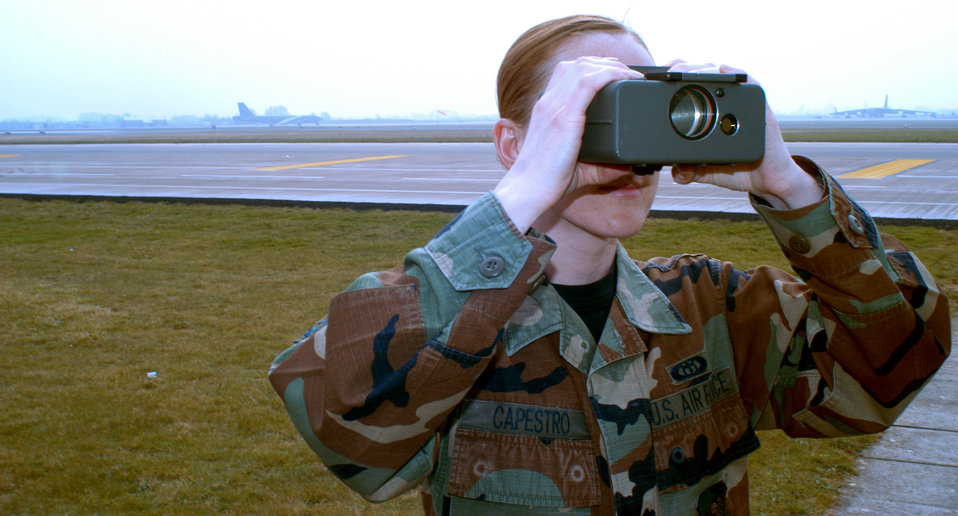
Forward vision

OPERATION IRAQI FREEDOM -- Senior Airman Mellissa Capestro uses a distance-measuring tool to check visibility at a forward-deployed location. She is a weather forecaster with the 457th Air Expeditionary Group.